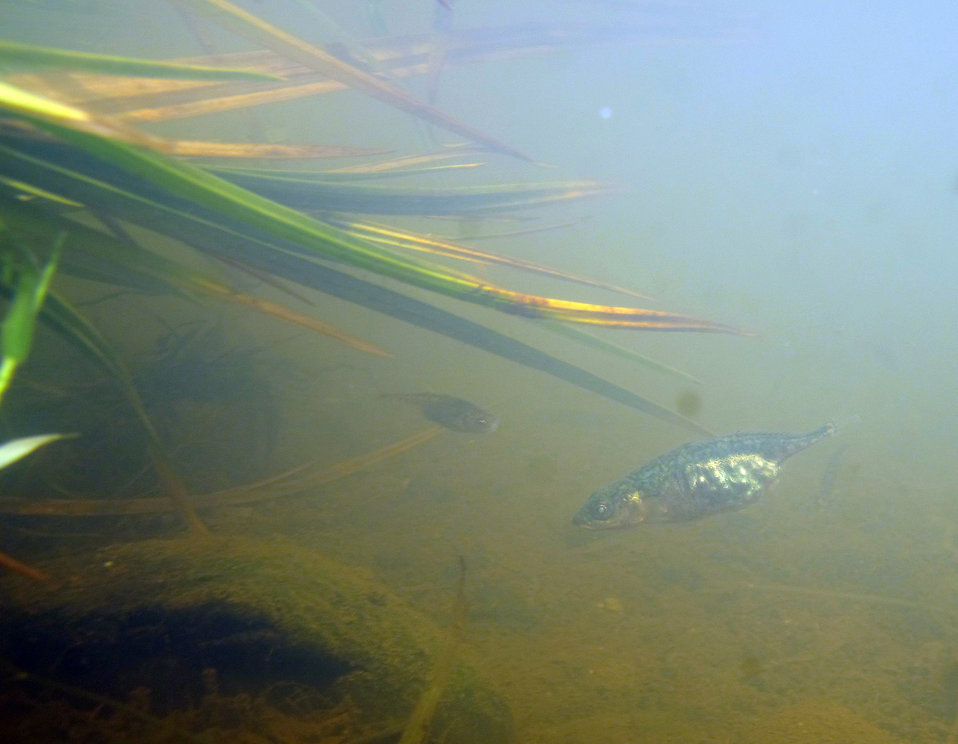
3 spine sticklebacks

Beluga Lake in Homer, AK.